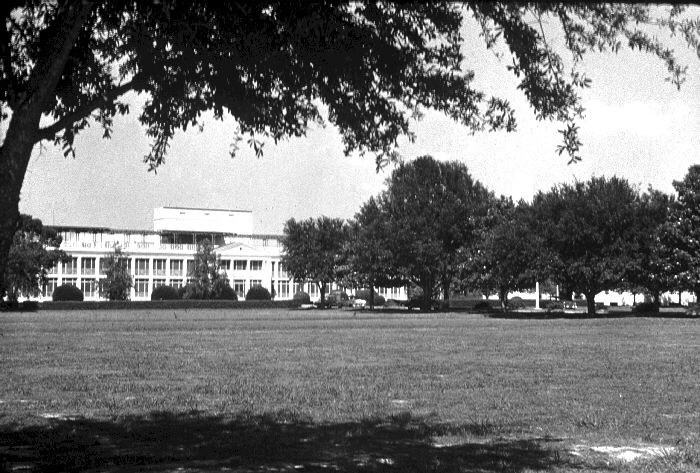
PHS Hospital in Carsville, LA.